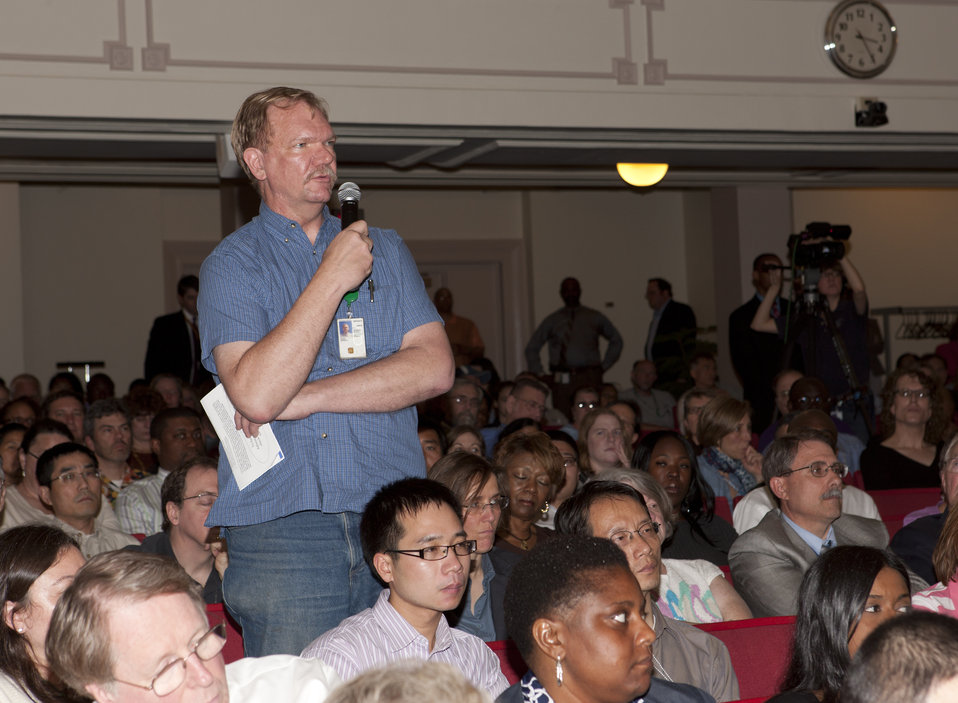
U.S. Department of Agriculture (USDA) employee Lewis Ziska asks Agriculture Secretary Tom Vilsack, a question at the USDA Employees Ask the Secretary Session held at the USDA Carver Center in Beltsville, MD on Wednesday, March 21, 2012.